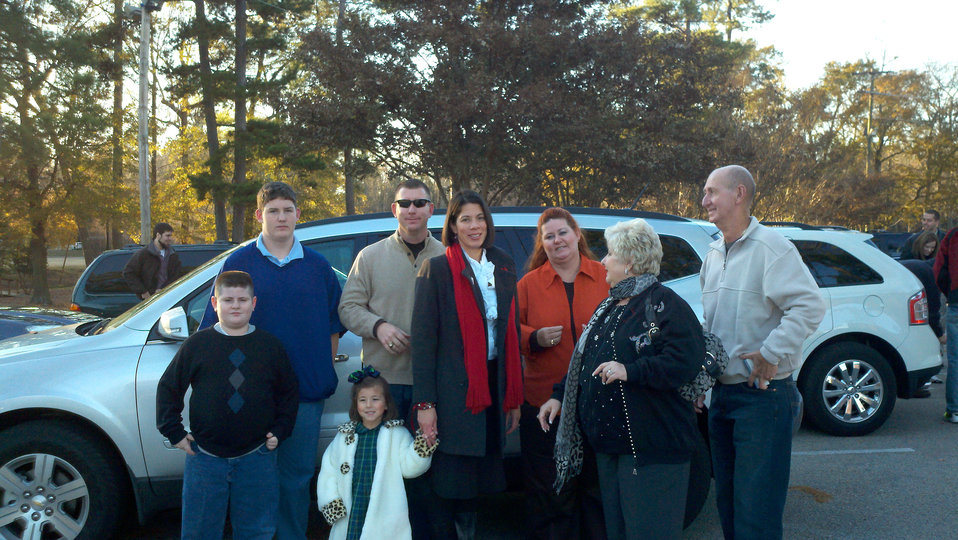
A father's love

Master Sgt. Roger Lammey's Family and Mrs. Lammey's family all work together to support each other. The Lammey Family has gone through many medical misfortunes, but they have persevered together.